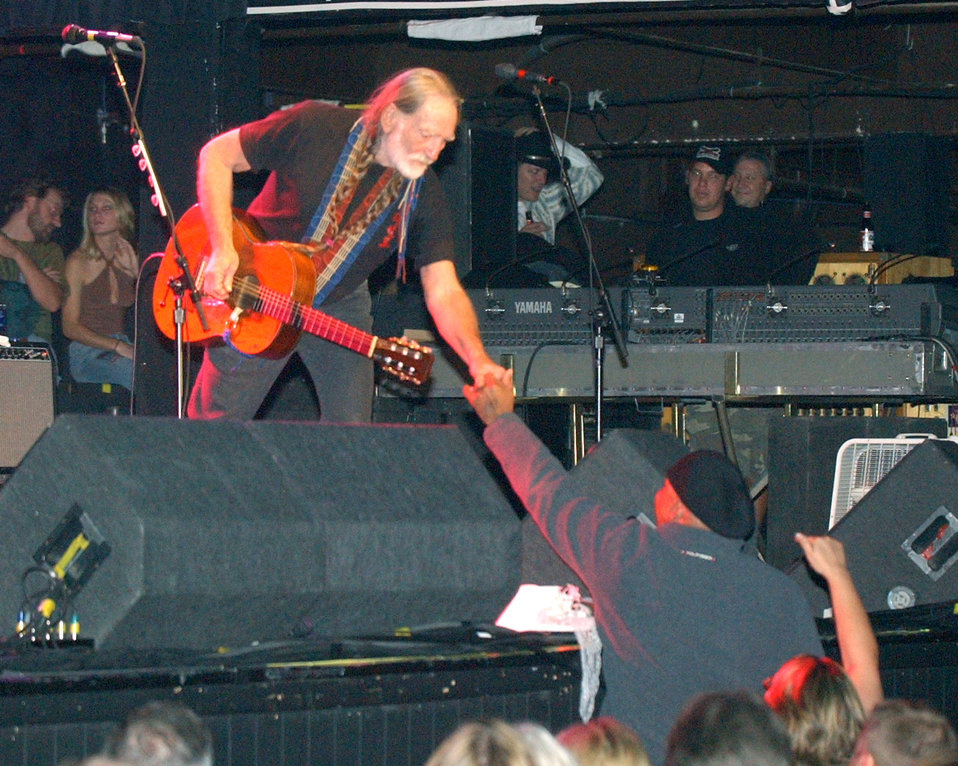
Airman prescribes dose of 'fun,' boosts morale

FORT WORTH, Texas -- Army Cpl. J.R. Martinez presents a military coin to Willie Nelson during his concert here Nov. 12. Corporal Martinez received burn wounds when the Humvee he was driving hit a landmine in Iraq and burst into flames.